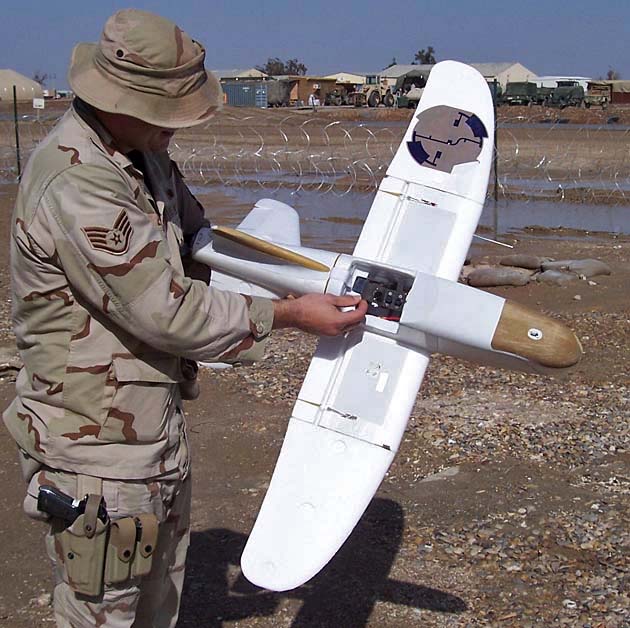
Desert Hawk UAV patrols Tallil

TALLIL AIR BASE, Iraq -- Staff Sgt. James Ellis adjusts the camera in a Desert Hawk here Jan. 26. The Desert Hawk is a miniature unmanned aerial vehicle used by security forces to see beyond base perimeters providing a rapid assessment of threats.